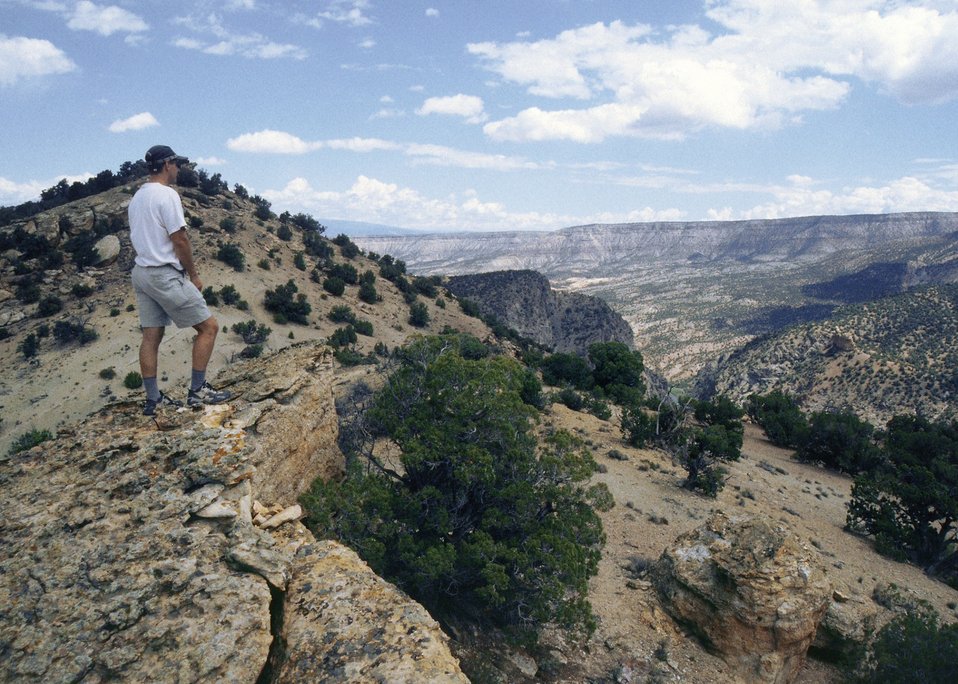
Hiking